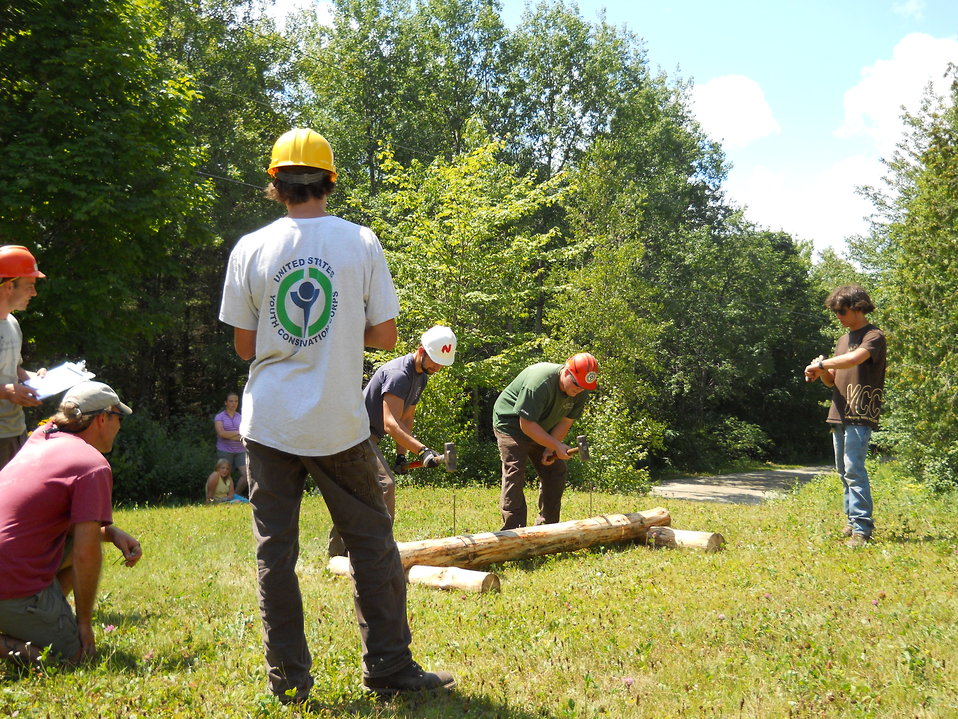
YCC construction at the Silvio O. Conte National Fish and WIldlife Refuge.